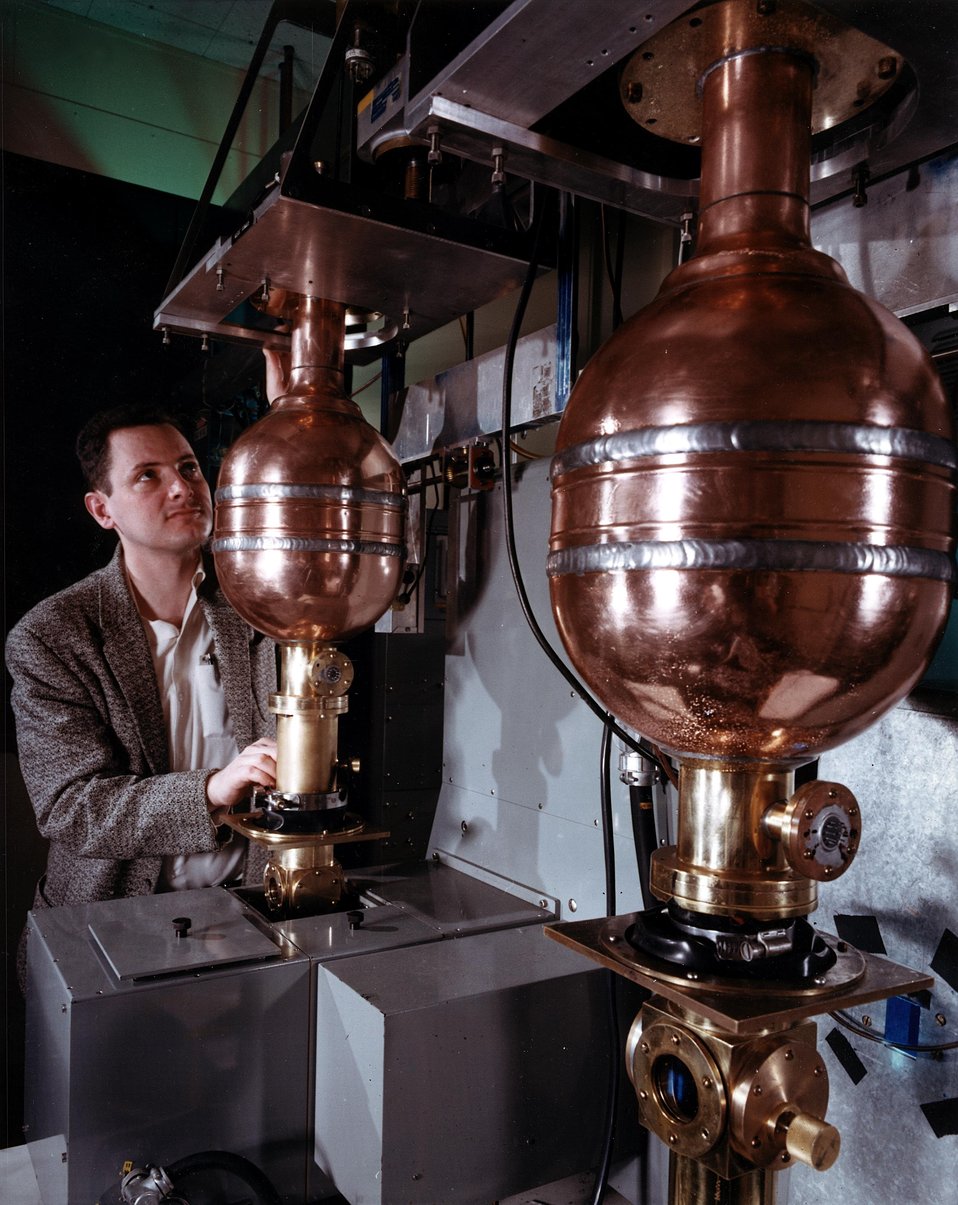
Low temperature research on transparent crystals using a spectrophotometer and Helium Dewar.